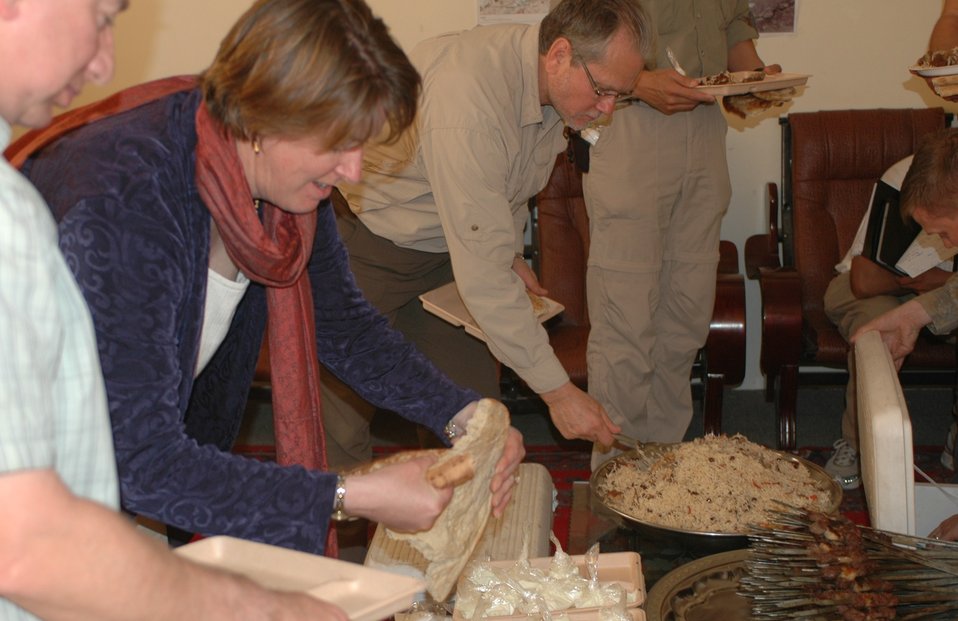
Dr Shah Visits Argandab April 10, 2010